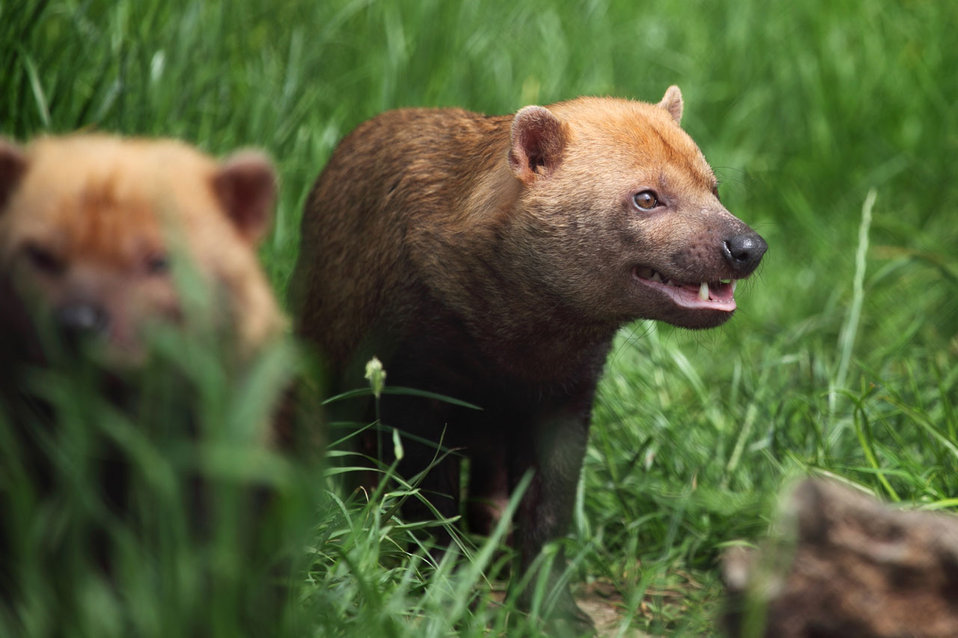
Bush dog - speothos venaticus in chester zoo.